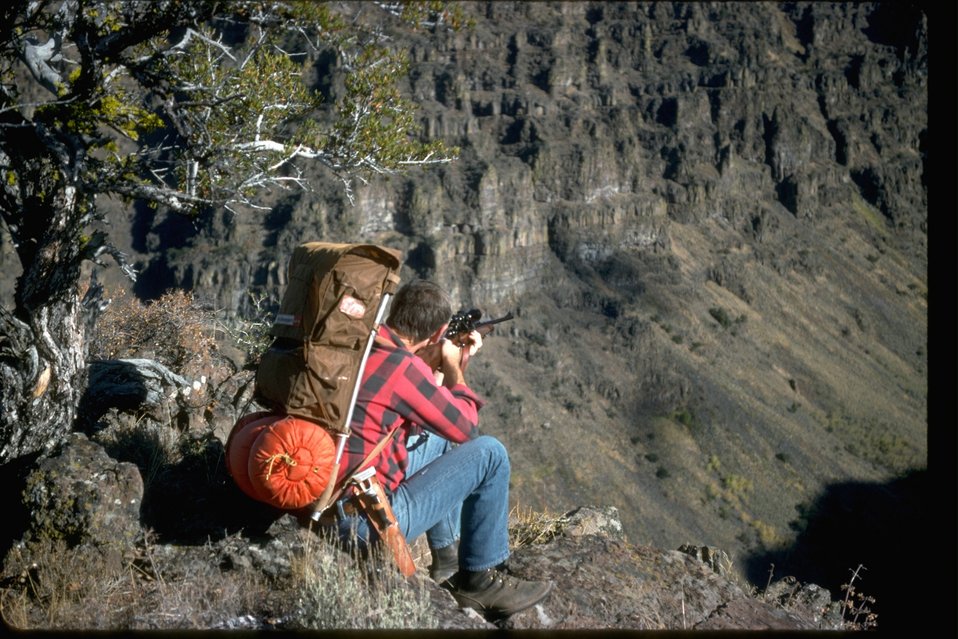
Big game hunting in the Steens Mountains in Southeastern Oregon.